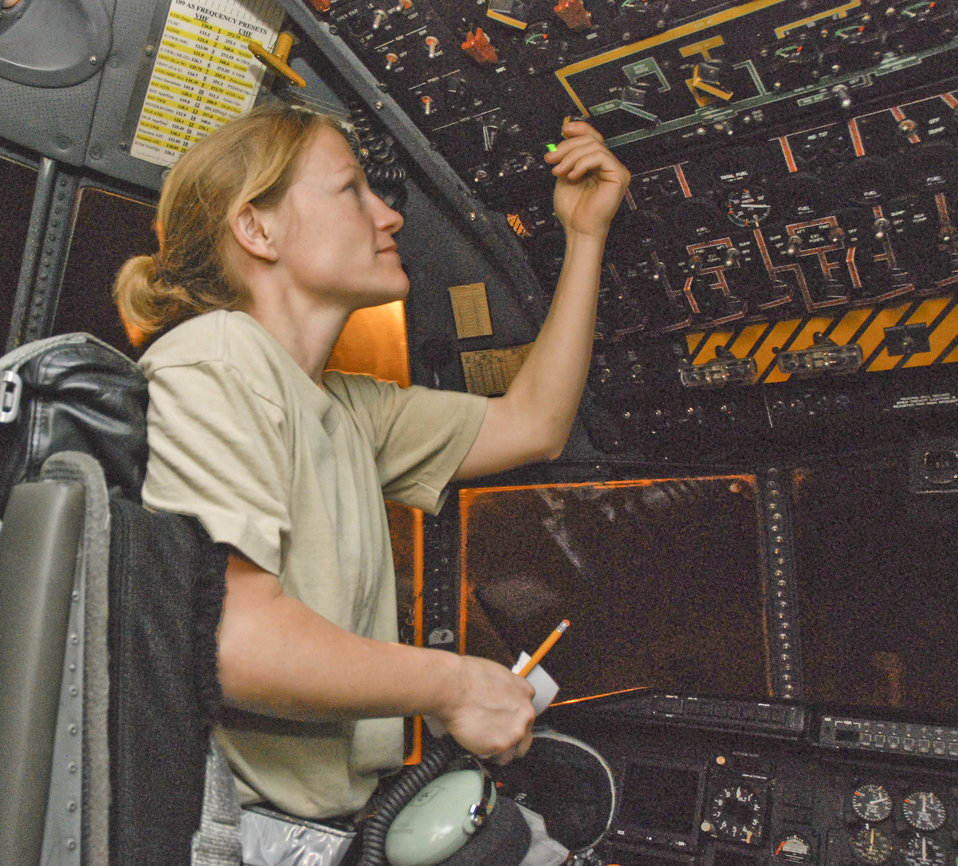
Aircrew, maintainers tackle Haiti relief effort

Staff Sgt. Brandilen Leary switches off power to a C-130 Hercules after completing the post-flight radar and navigation systems check Jan. 27, 2010, at Muniz Air Base, Puerto Rico. Sergeant Leary is a 35th Expeditionary Airlift Squadron communications/navigation technician from the 302nd Airlift Wing, Peterson Air Force Base, Colo.